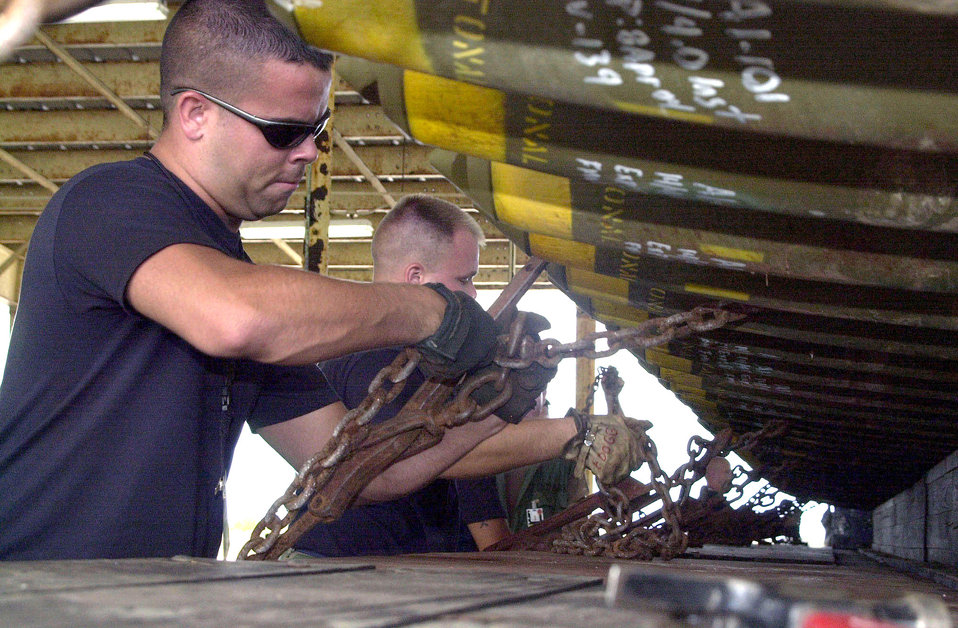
AMMO!

OPERATION IRAQI FREEDOM -- Maintainers from the 7th EMUNS tighten down MK-82 general purpose bombs at Andersen Air Base, Guam on April 9, 2003 in support of Operation Iraqi Freedom.